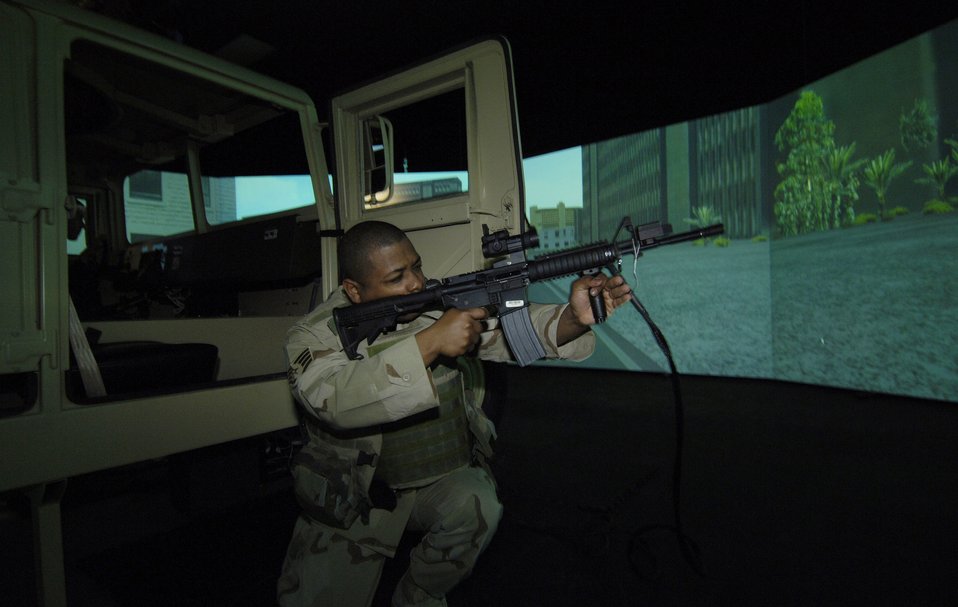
A first for simulated force training

Using an M-4 assault rifle, Staff Sgt. Bruce Thompson fires at